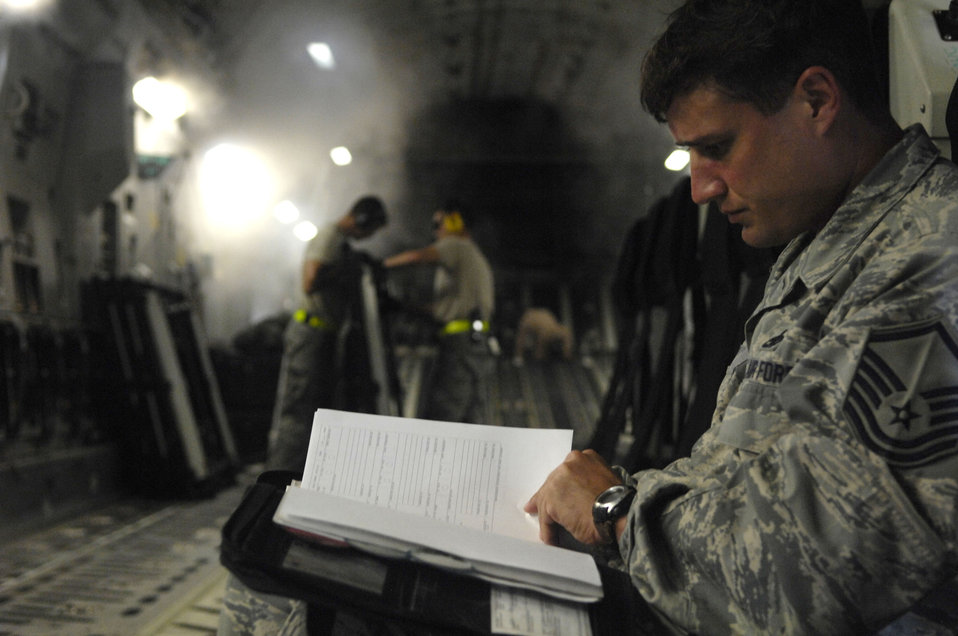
C-17 Reaches Across the Globe

Master Sgt. Daniel Buse of the 734th Air Mobility Squadron reviews forms from a C-17 Globemaster III while a C-17 is reconfigured to carry two Mine Resistant Ambush Protected, or MRAP, vehicles on Dec. 28, 2008. It is Master Sgt. Buse's job to make sure the jet is air worthy. One MRAP will be picked up at Andersen AB, while the other is picked-up at Kadena AB, Japan, in support of the commanders on the ground that are combating the war on terrorism in Afghanistan. The C-17 crew started out at Hickam and this mission illustrates the global reach capabilities of the Air Force across the globe.